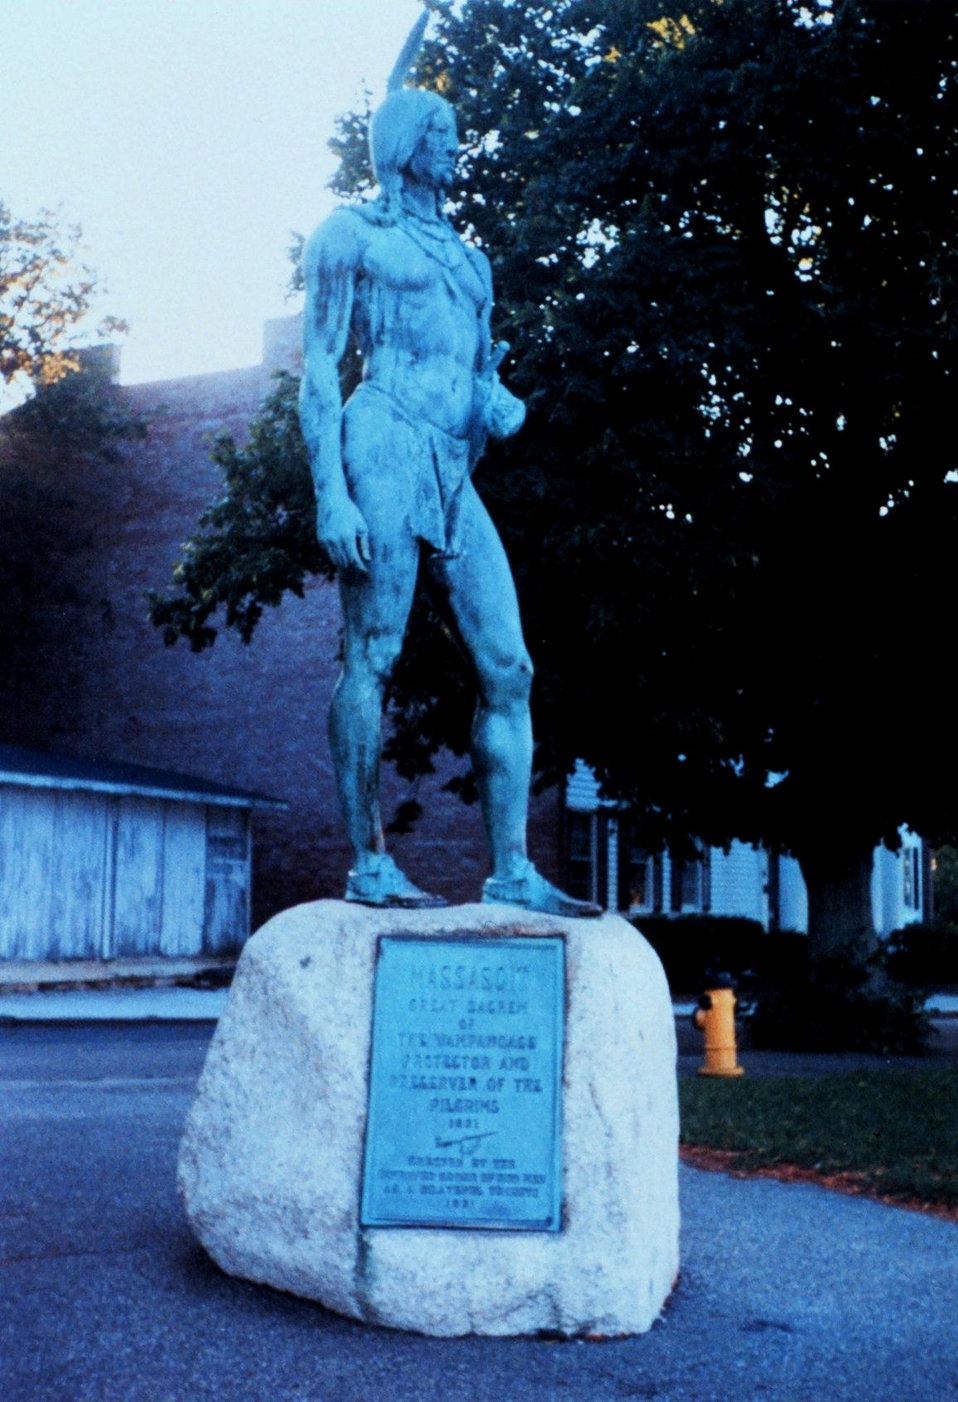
Massasoit, protector and preserver of the Pilgrims. Statue erected in his memory at Plymouth.